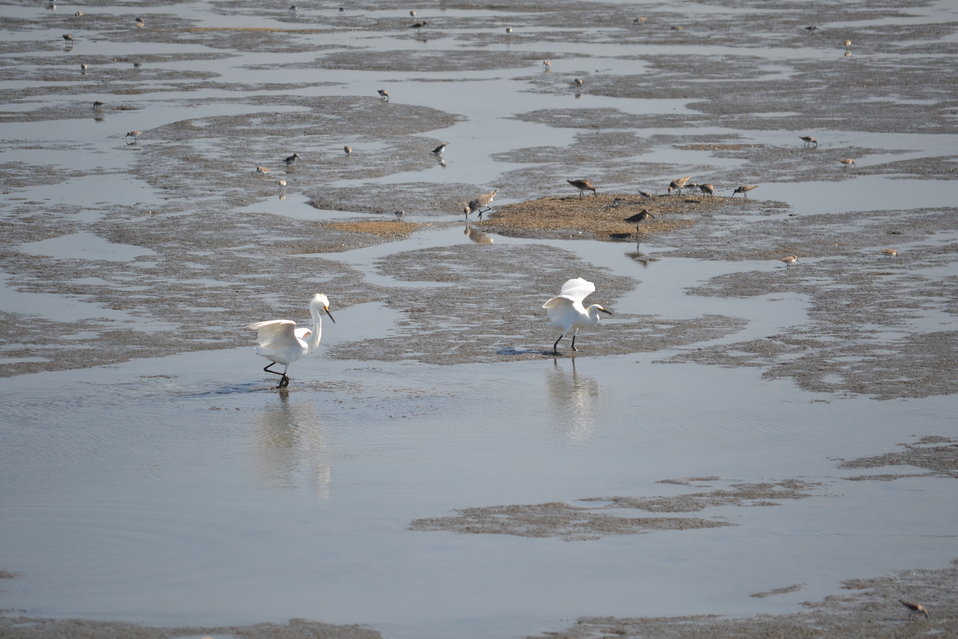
Excited egrets

Egrets and other shorebirds argue over their fishing spots on the mudflats. These mudflats haven't been exposed for birds to feed on in over 50 years. After Pond 11 was breached the the rest of San Diego Bay, it was now possible